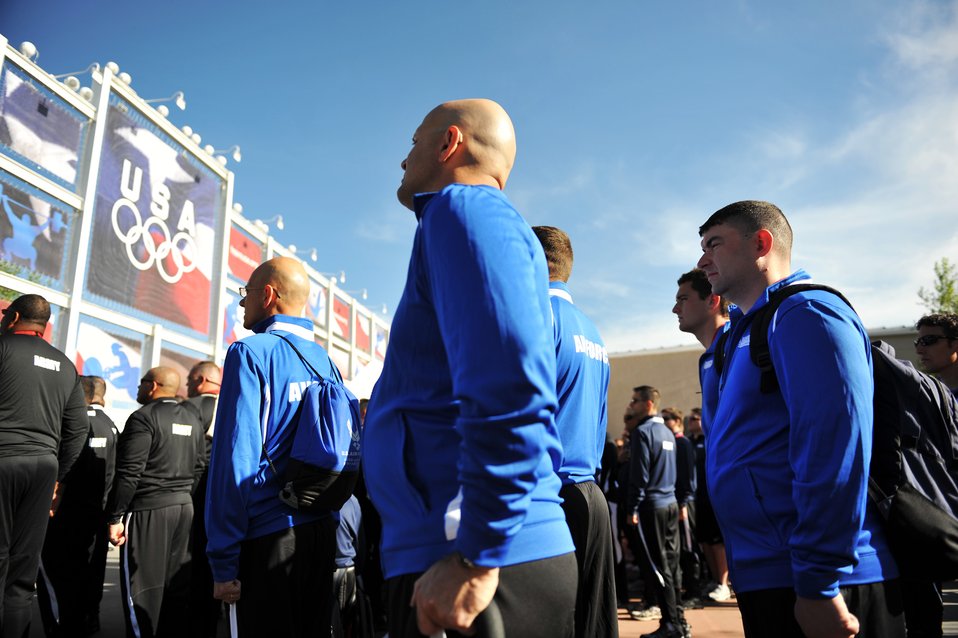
Warrior Games Opening Ceremony

Approximately 200 disabled veterans look on as Colorado Gov. Bill Ritter speaks during the opening ceremony of the inaugural Warrior Games May 10, 2010, at the U.S. Olympic Training Center in Colorado Springs, Colo. The Warrior Game athletes are competing in Paralympic-style events May 10 through 14.